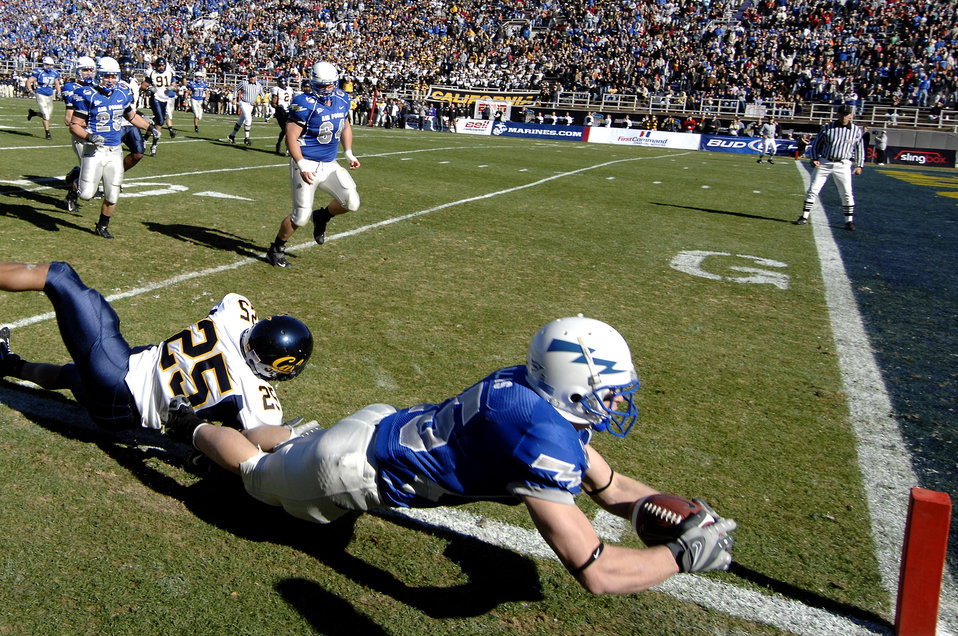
Falcons bowl return a bear

Falcon senior tailback Jim Ollis reaches for the goal line ahead of California defensive back Darian Hagan during first quarter action against the Golden Bears in the Bell Helicopter Armed Forces Bowl at Amon G. Carter Stadium Dec. 31. The Falcons lost 42-36 in their first bowl appearance since 2002 before a bowl record 40,905 fans and a nationally televised audience.